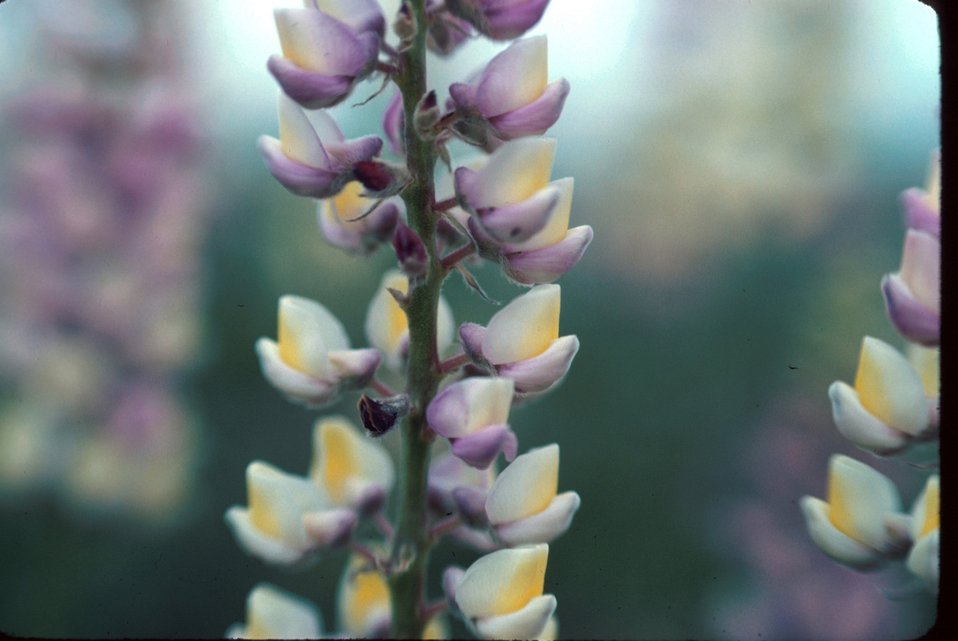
Lupinus Wildflower